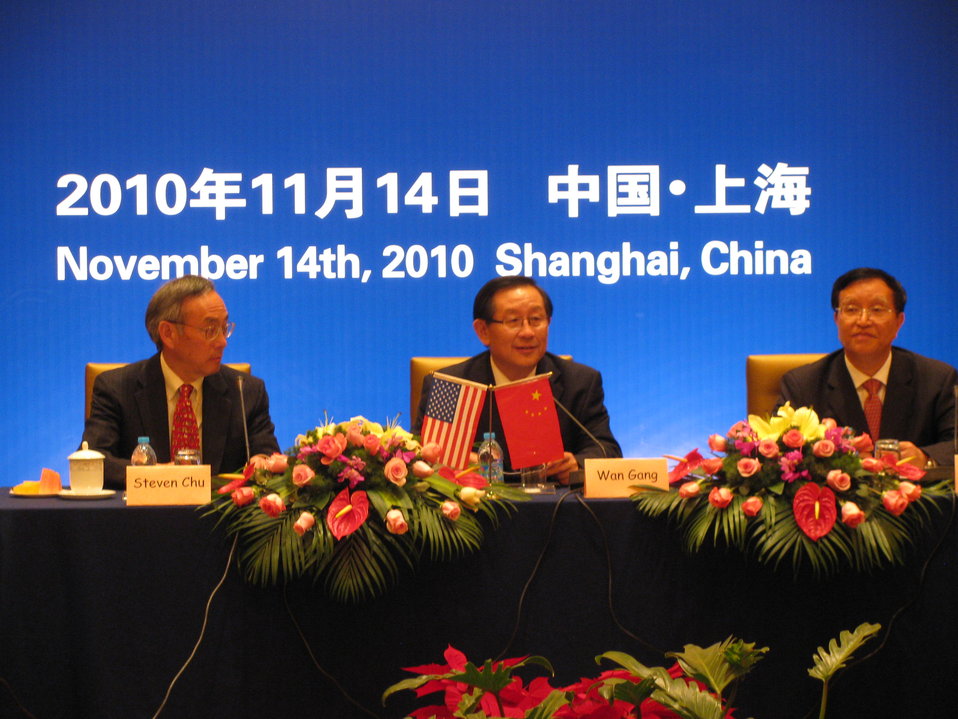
Shanghai 026